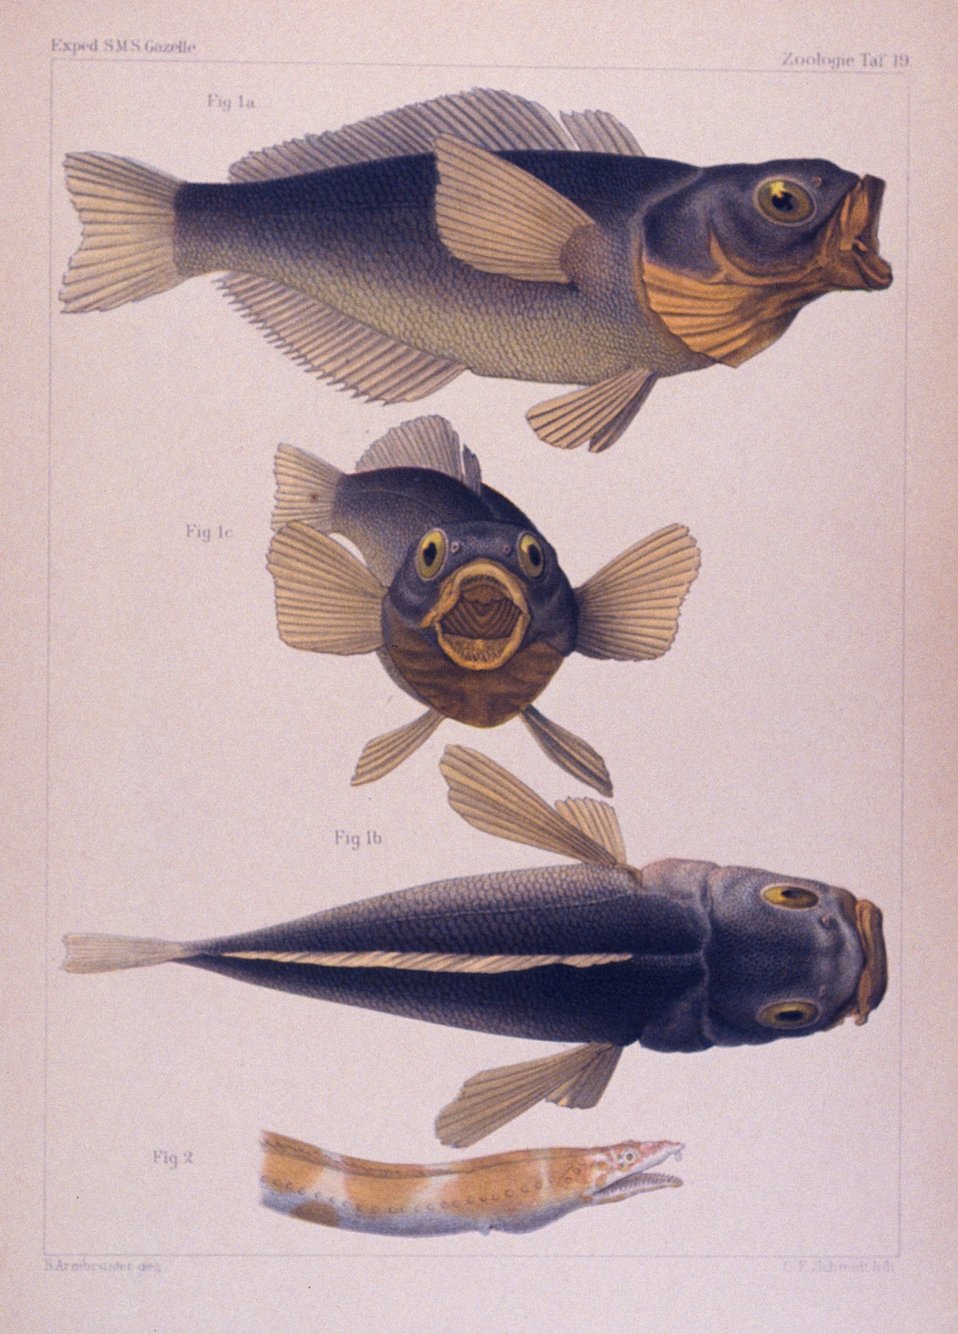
Drawings of fish captured during the GAZELLE expedition.